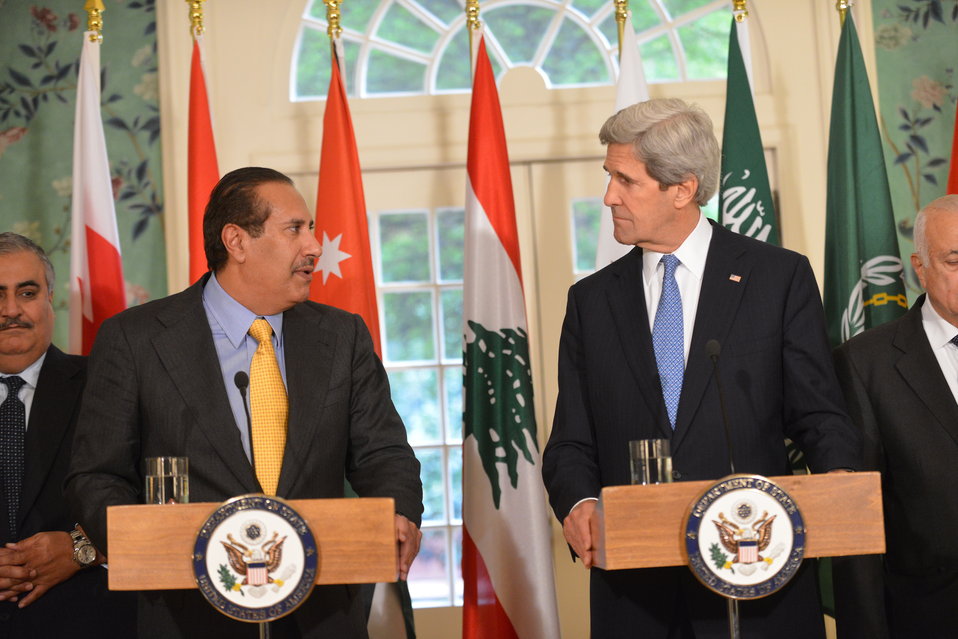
Secretary Kerry and and Qatari Prime Minister and Foreign Minister Sheikh Hamad bin Jassim bin Jabr Al-Thani Deliver a Joint Statement

U.S. Secretary of State John Kerry and Qatari Prime Minister and Foreign Minister Sheikh Hamad bin Jassim bin Jabr Al-Thani deliver a joint statement after a multilateral meeting with the Arab League delegation at the Blair House in Washington, D.C., on April 29, 2013.